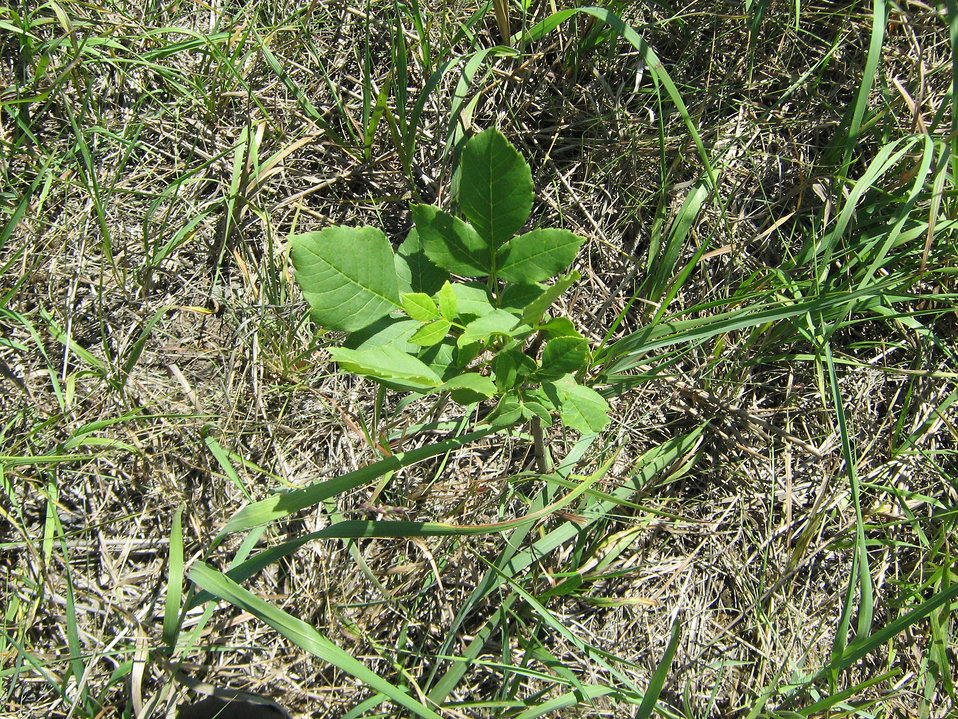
Seedling in July grazed paddock

A number of woody species were noticed stripped of leaves or trampled in the June and July grazed paddocks. Some were resprouting, but much of the woody species were set back by the grazing treatment. Photo 9-5-2012.